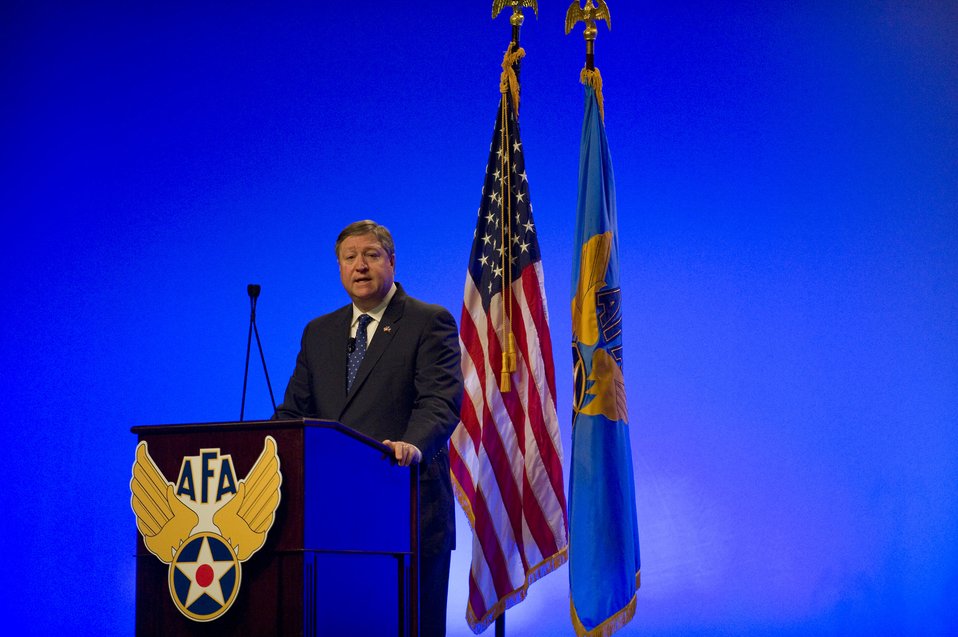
Secretary Donley addresses steps to strengthen Air Force

Secretary of the Air Force Michael Donley discusses the Air Force's top priorities during the Air Force Association's Air Warfare Symposium and Technology Exposition Feb. 18, 2010, at the Rosen Shingle Creek Hotel in Orlando, Fla.